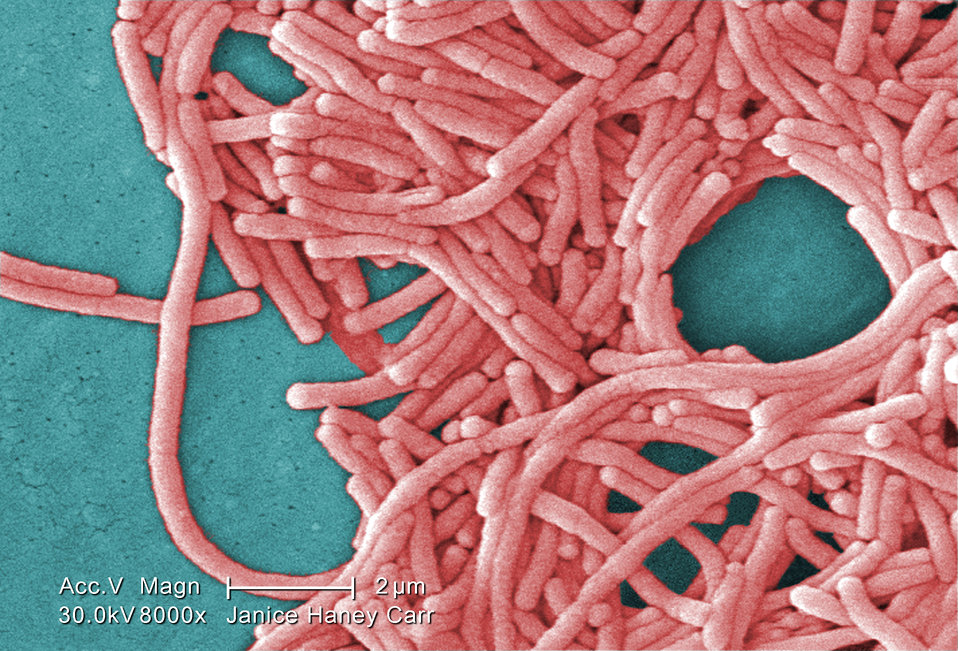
Under a moderately-high magnification of 8000X, this colorized scanning electron micrograph (SEM) depicted a large grouping of Gram-negative Legionella pneumophila bacteria. Please see PHIL 11092 through 11152 for additional SEMs of these organisms, specifically PHIL 11151 for a black and white version of this image. Of particular importance, is the presence of polar flagella, and pili, or long streamers, which due to their fragile nature, in some of these views seem to be dissociated from any of the bacteria.